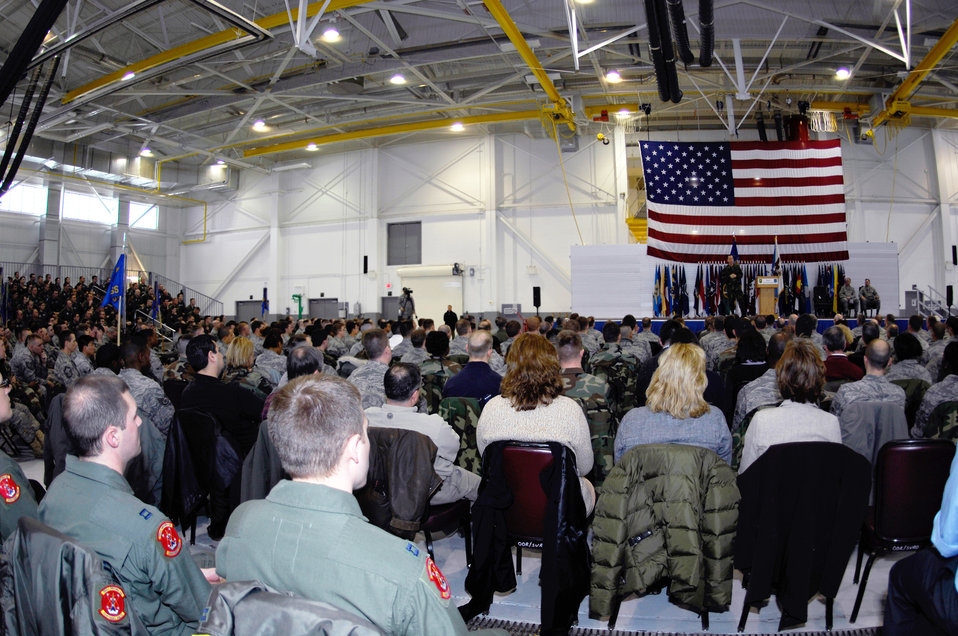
JCS chairman visits Minot

Adm. Michael G. Mullen, chairman of the Joint Chiefs of Staff, held a town hall meeting Feb. 18 during his visit to Minot Air Force Base, N.D. At the meeting, Admiral Mullen talked about the importance of family support, concerns over the economic crisis and the base's role in nuclear deterrence as the Air Force's only dual-wing, nuclear-capable base.